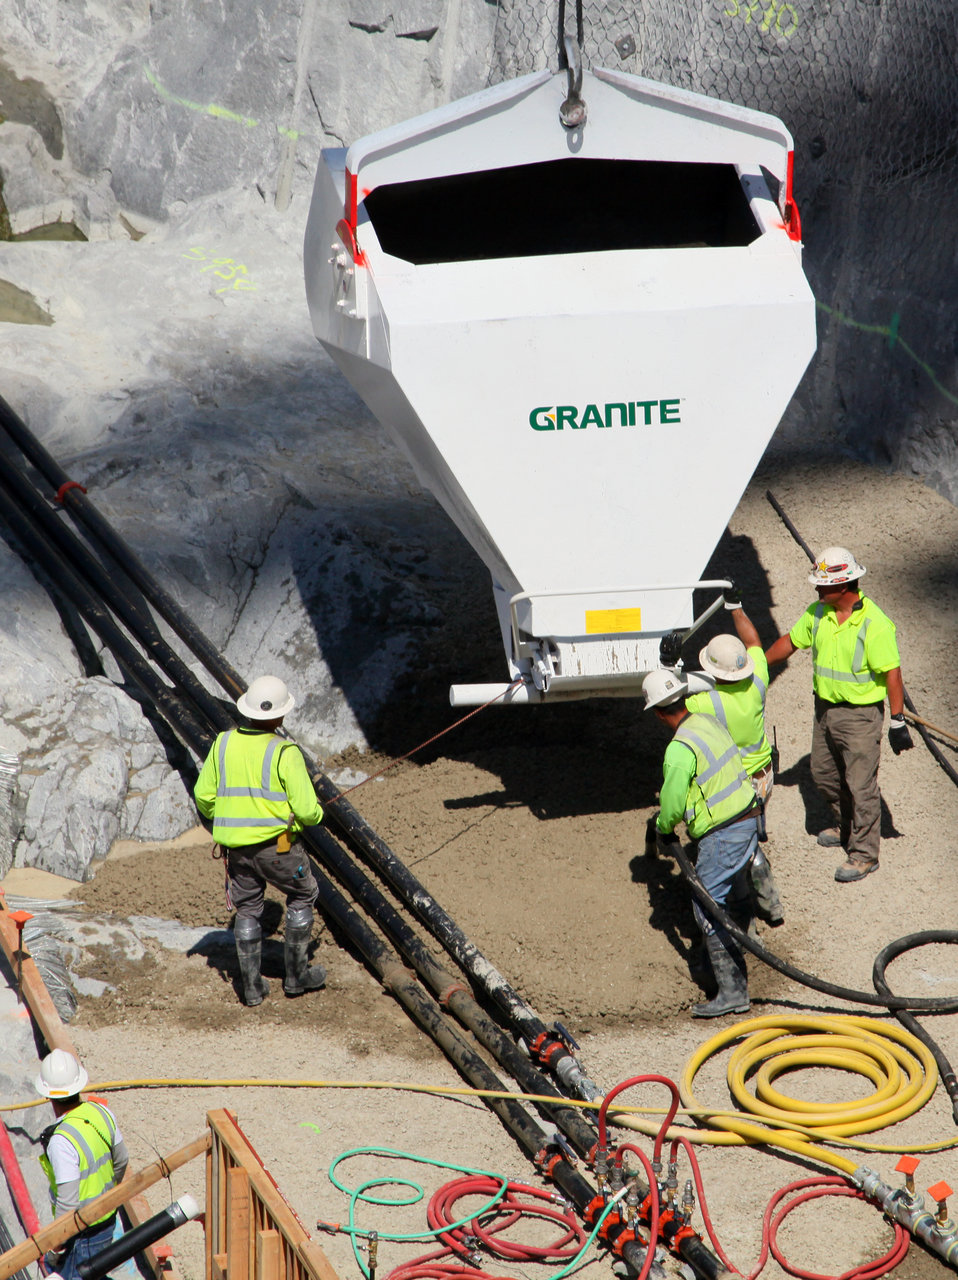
First concrete placed for new Folsom Dam spillway

Workers place the first batch of concrete for the new auxiliary spillway control structure at Folsom Dam in Folsom, Calif., May 24, 2012. The U.S. Army Corps of Engineers, together with the U.S. Bureau of Reclamation and state and local partners, is building the spillway to reduce flood risk throughout the Sacramento region.